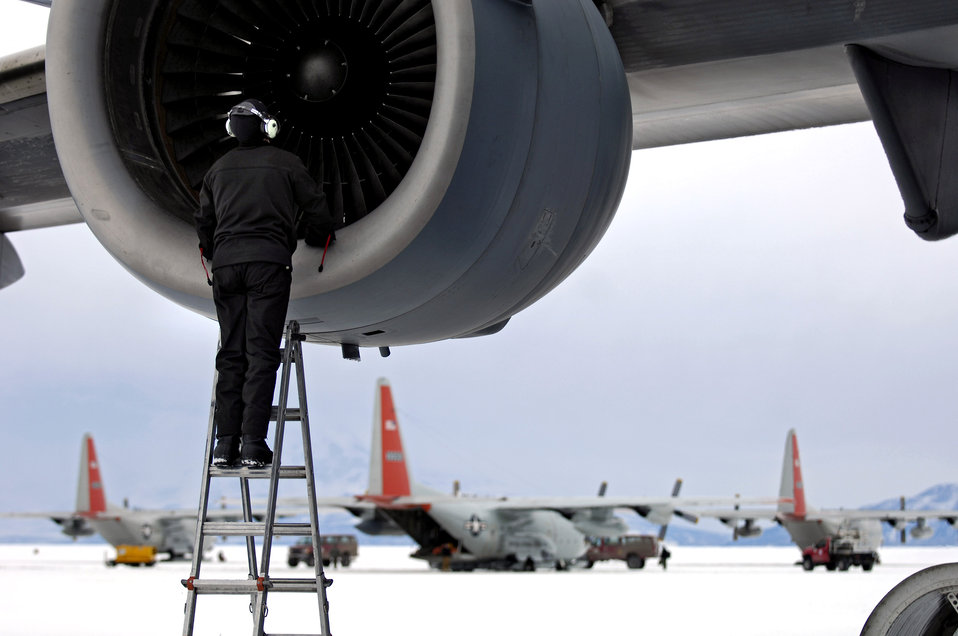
Airmen support Operation Deep Freeze

Staff Sgt. Lance Hasz conducts a pre-flight inspection on a C-17 Globemaster III prior to taking off Nov. 22 from McMurdo Station, Antarctica. Reserve and active duty Airmen from McChord Air Force Base, Wash., are staging at Christchurch, New Zealand, to support the 13th Air Force-led Joint Task Force Support Forces Antarctica's Operation Deep Freeze.